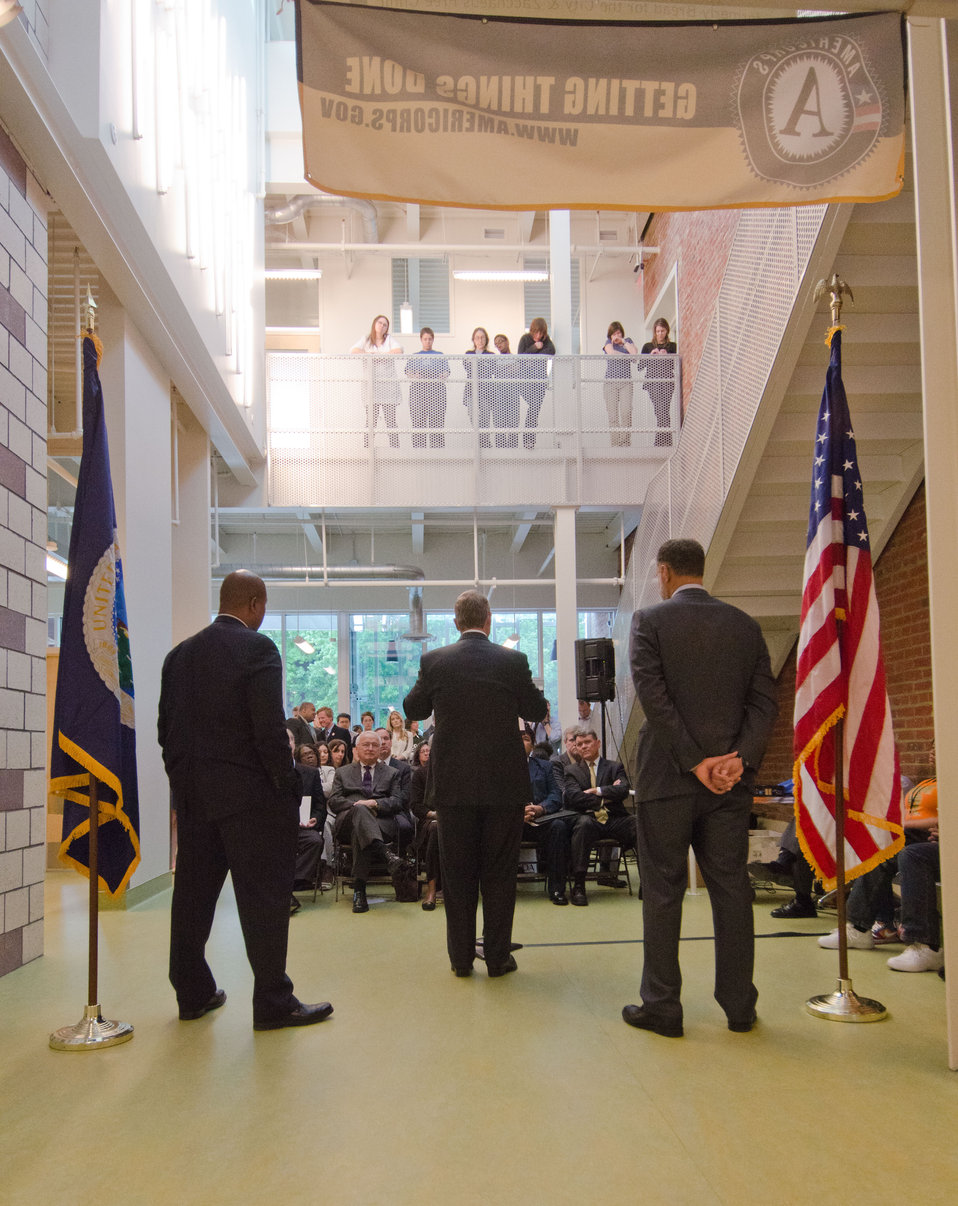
Agriculture Secretary Tom Vilsack (center), Corporation for National and Community Service CEO Patrick Corvington and Bread for the City President George Jones announced on Thursday April 29, 20ll in Washington, DC, each of their organization's are commimited to ending childhood hunger. Secretary Vilsack presented USDA's resources to champion the end of hunger and create innovative partnerships to address hunger, especially among children. Vilsack announced that USDA has made available to individuals, groups and communities the tools and technical assistants to become champions themselves in ending childhood hunger. He shared the web address www.fns.usda.gov/ech, where people can participate in an online commitment for that cause and identified actions that can be taken. When a person registers as a Stakeholder, they, their group or community can be kept informed and have input about ending childhood hunger. A follow-on link to www.serve.gov can assist a person in finding volunteer opportunities in their area; register an unlisted program; share a story about a volunteer project or personal experience; and help get the word out about United We Serve.